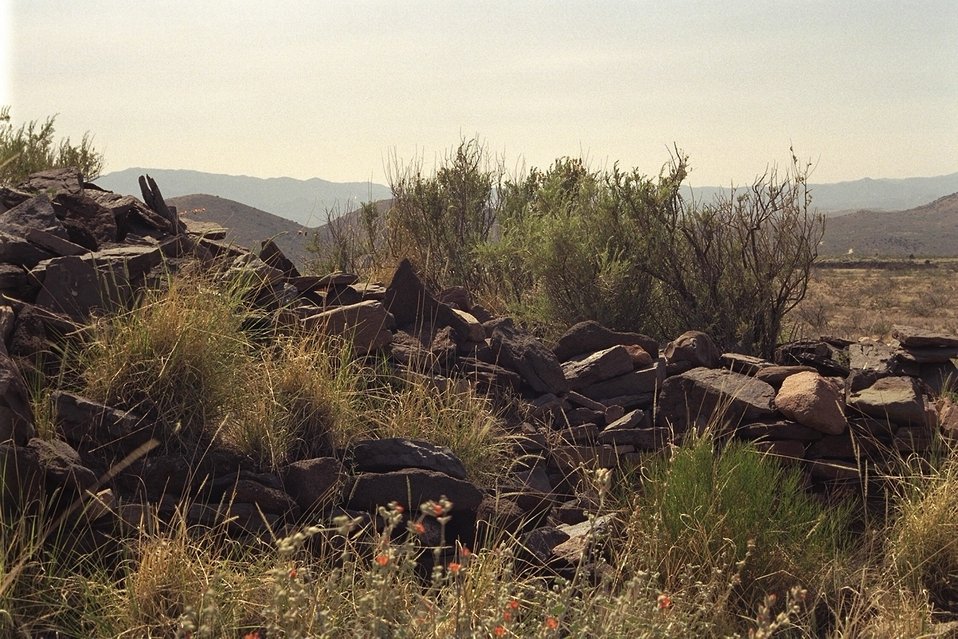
A pile of rocks with some scenic mountains in the background in the Agua Fria National Monument.